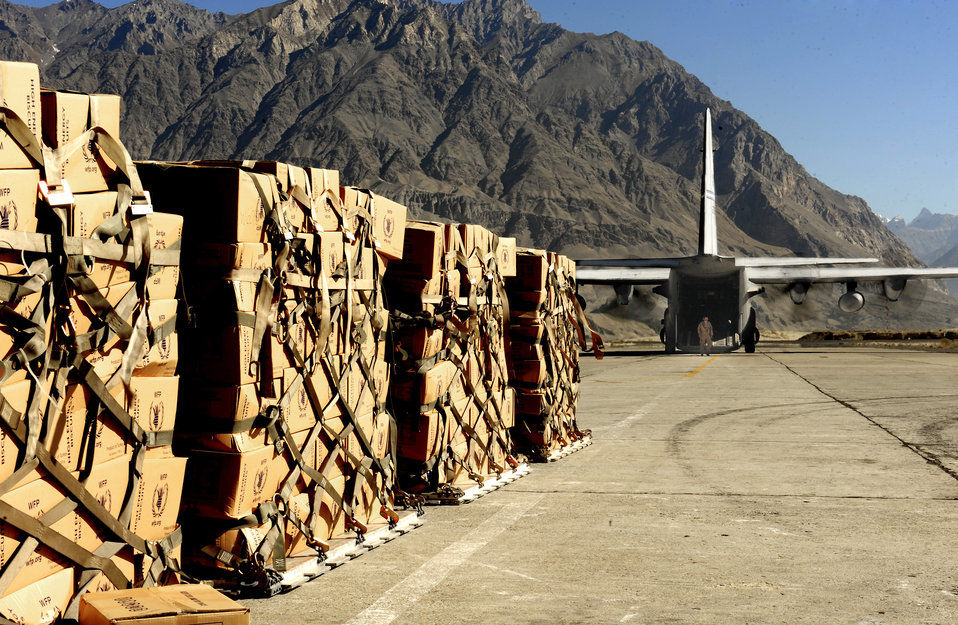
Flood relief

U.S. military aircrews, working in close coordination with the Pakistan military, have transported more than 6.6 million kilograms of relief supplies and evacuated 21,000 people in the flood-affected regions of Pakistan during August and September